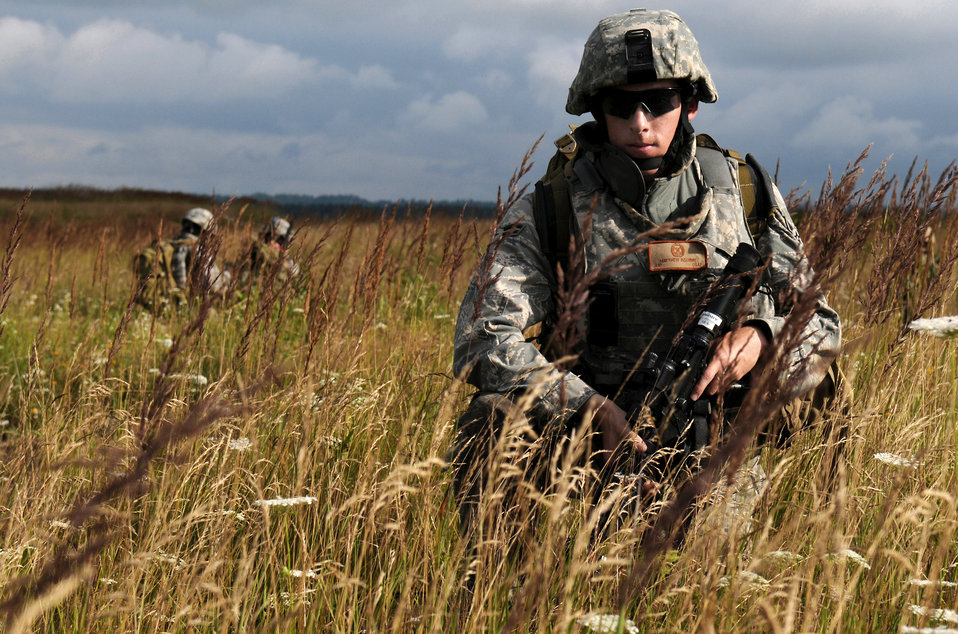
Keeping careful watch

Airman 1st Class Matthew Aguirre, a Tactical Air Control Party Airman from the 1st Air Support Operations Squadron at Wiesbaden, Germany, secures a position for teammates Aug. 3 during Allied Strike, a multi-national exercise taking place in Grafenwoehr, Germany.